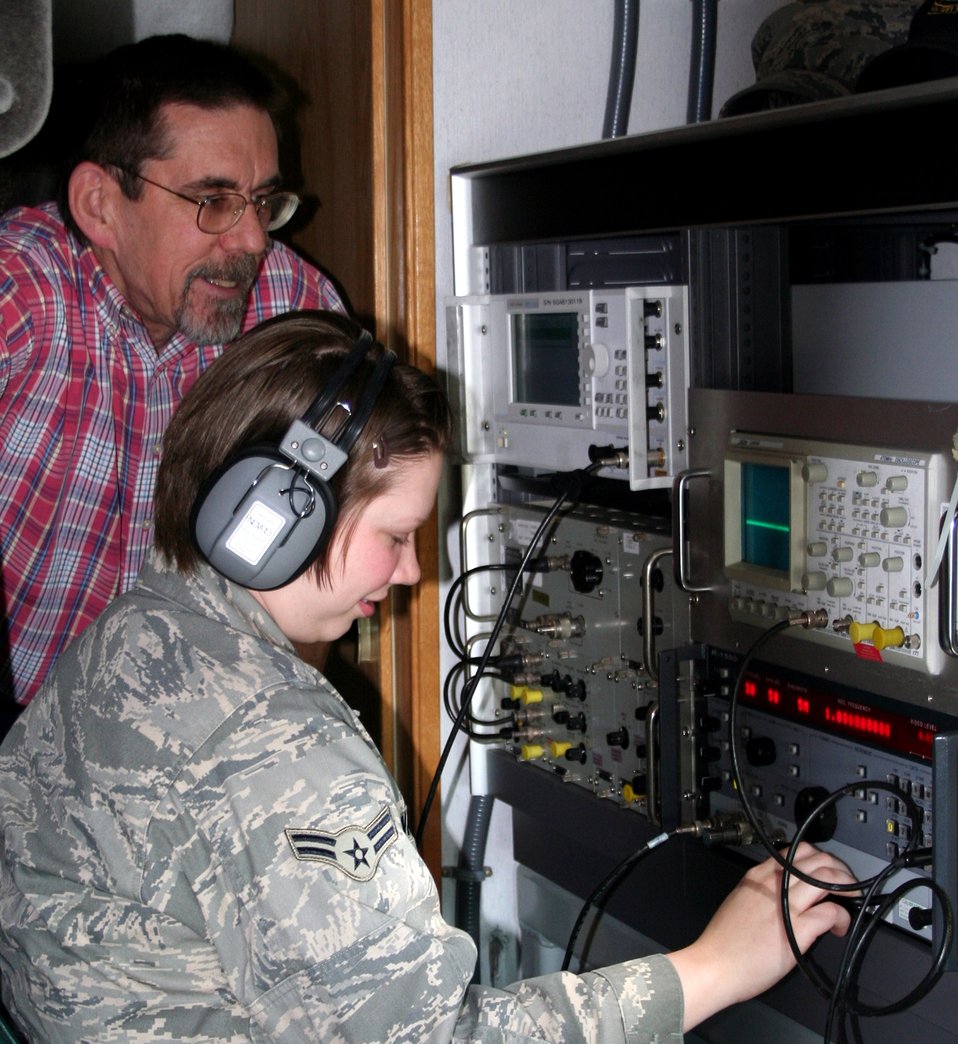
Closing enemy windows of opportunity

Barry Booth leads Airman 1st Class Michelle Wallen through the measurement and recording of a signal of interest during a recent emission security test of a laptop computer intended for use in a classified system. Mr. Booth and Airman Wallen are assigned to the 346th Test Squadron's Emission Security Flight.